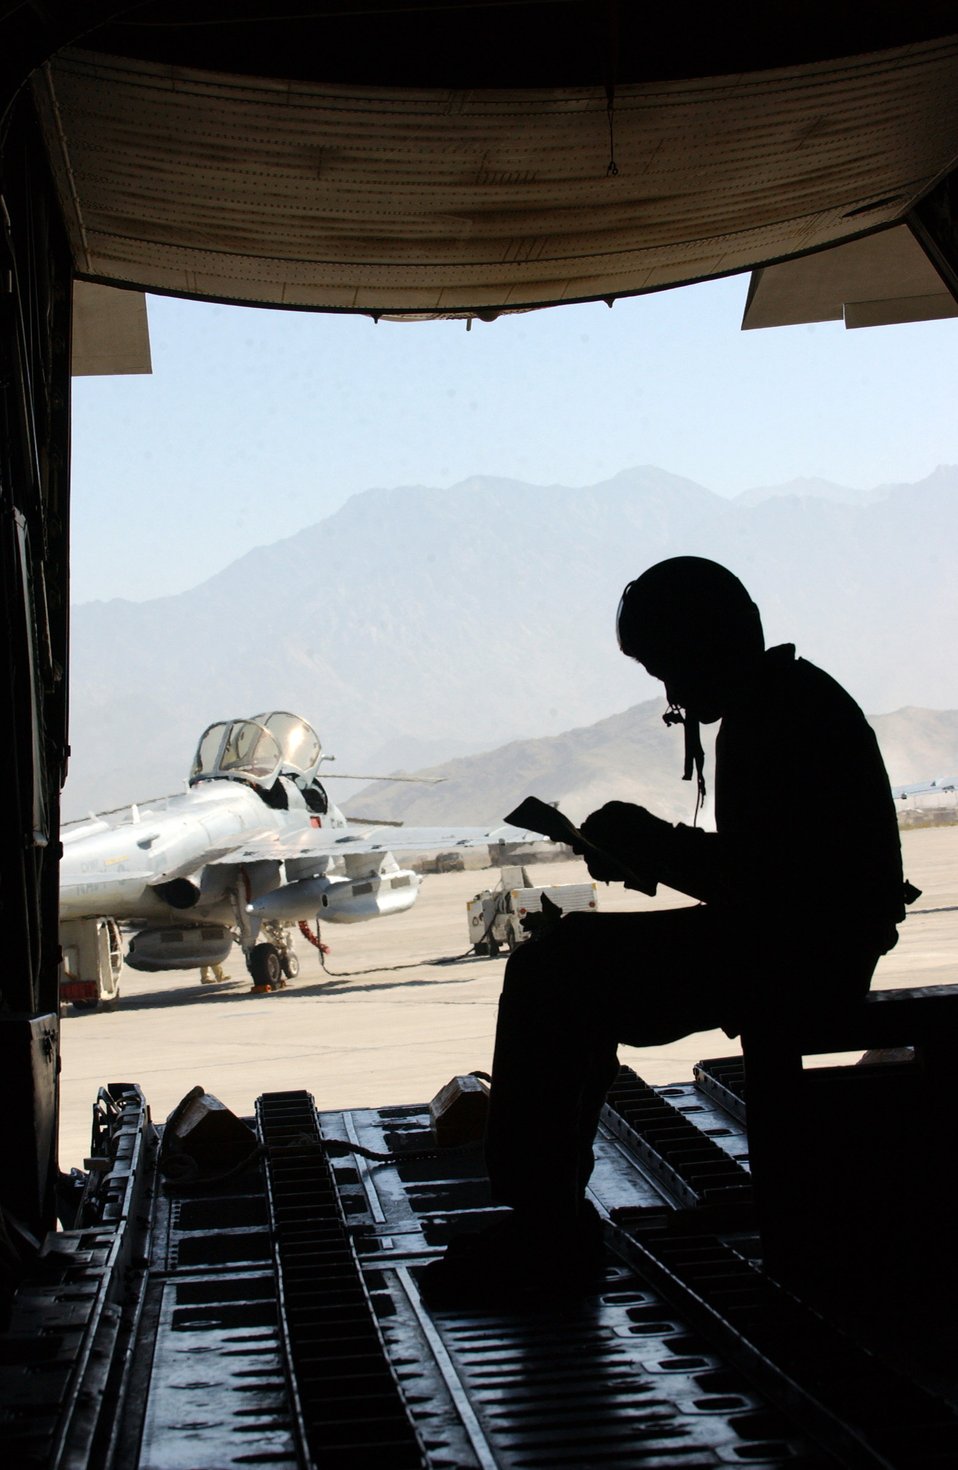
Airmen drop much-needed supplies to Soldiers, Marines

BAGRAM AIR BASE, Afghanistan -- Senior Airman Johnny Rivera prepares for a C-130 Hercules mission that supplied ground troops with equipment needed. He is a loadmaster with the 317th Aircraft Maintenance Squadron and is deployed from Dyess Air Force Base, Texas.